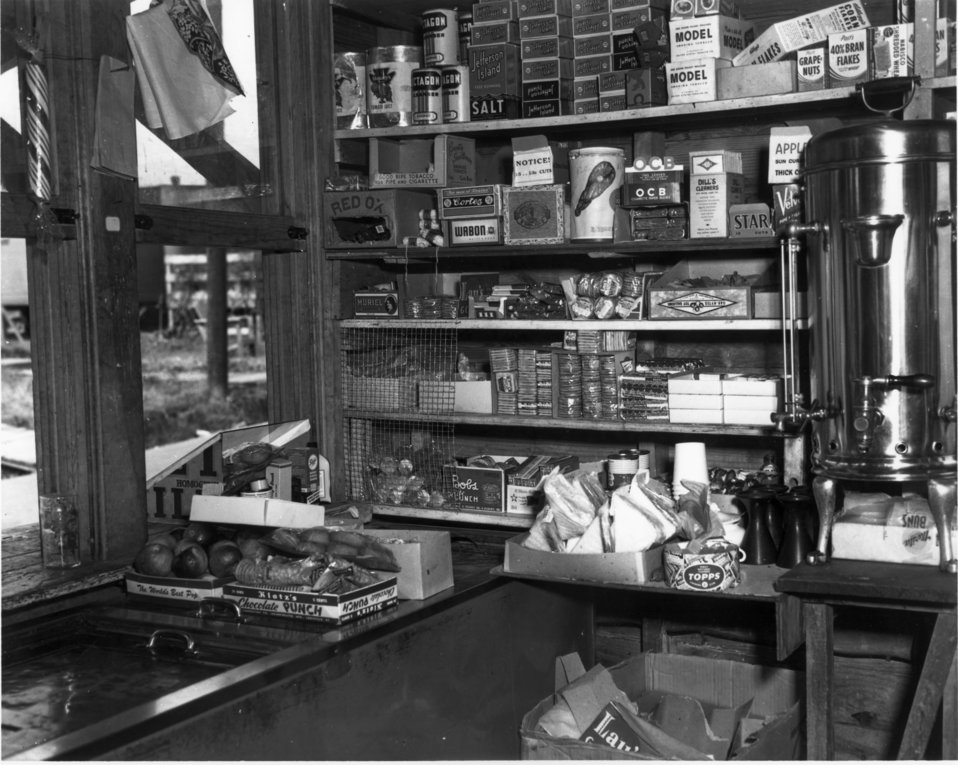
Canteen Oak Ridge

3150 DOE photo by Ed Westcott 1945 Oak Ridge Tennessee